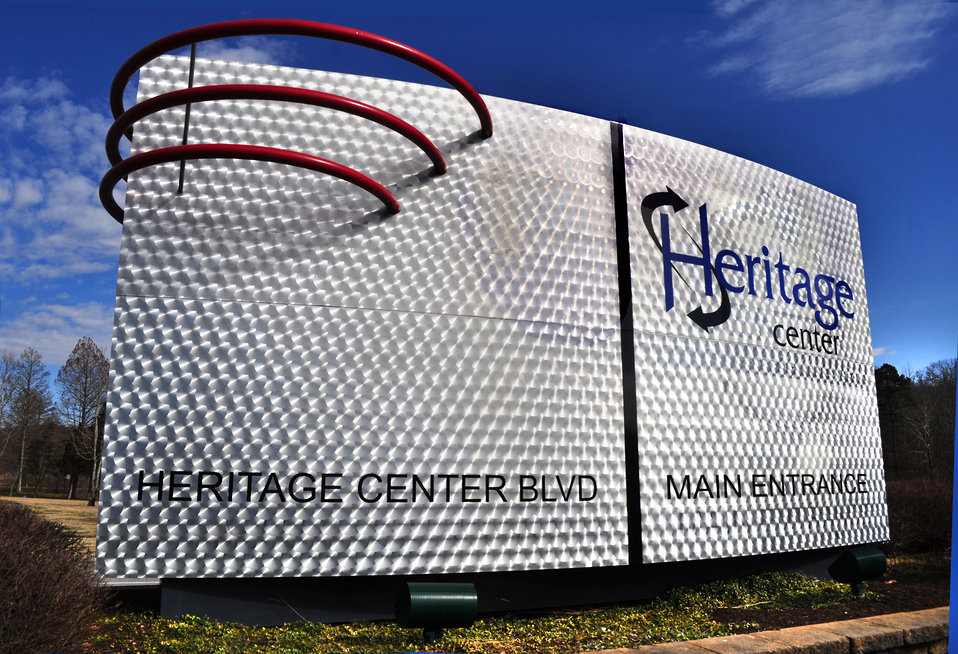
New Heritage Center Sign at ETTP Oak Ridge

13-044 DOE photo Lynn Freeny 4-30-2013 Oak Ridge Tennessee